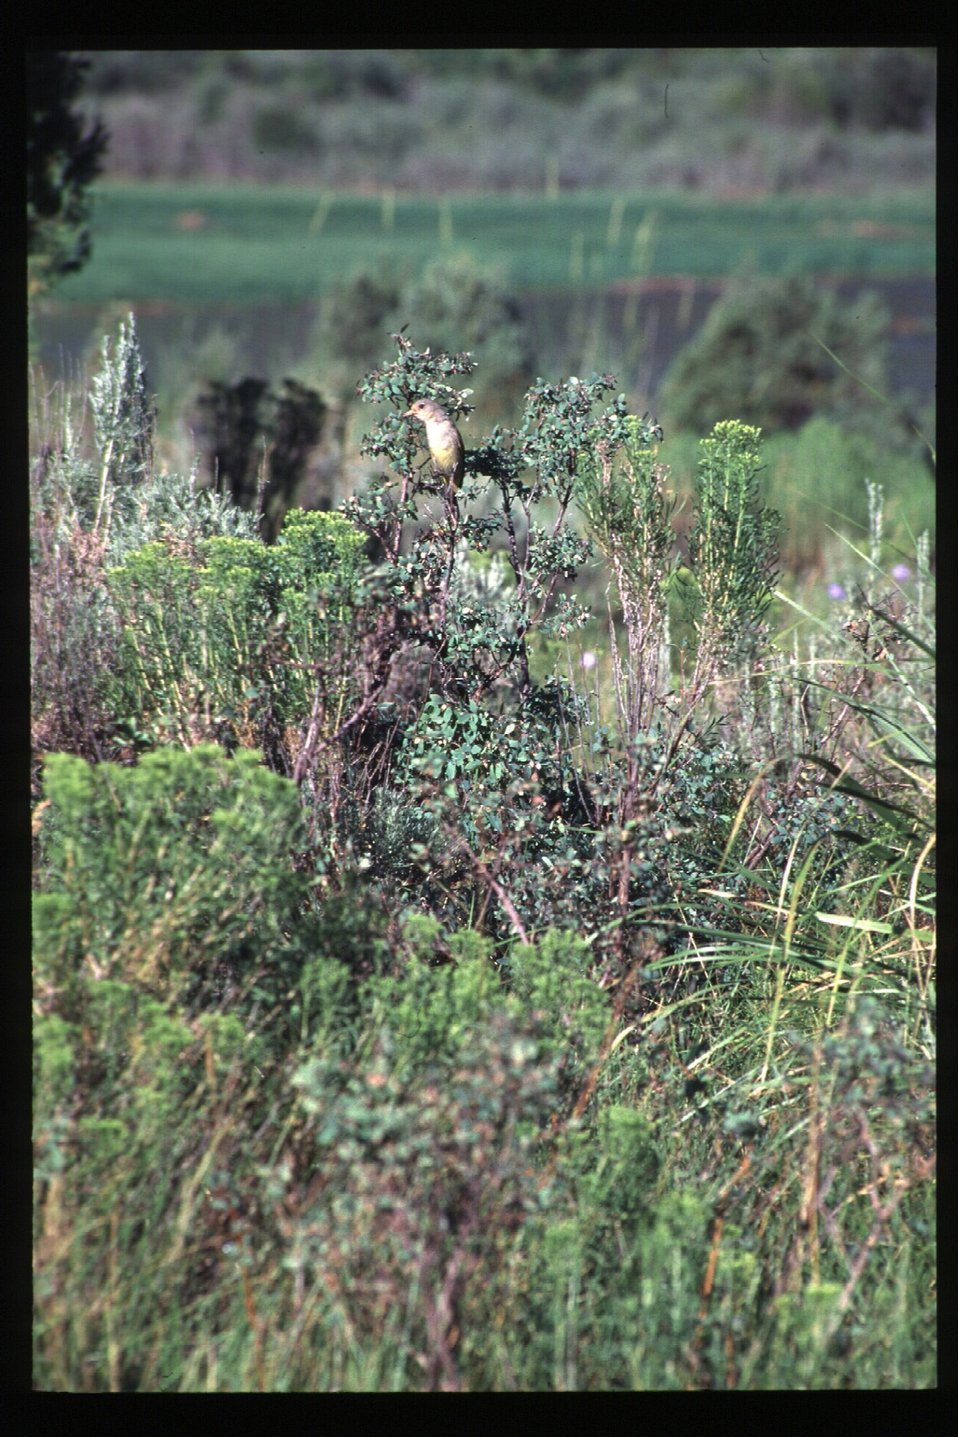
Scenics South Snake River Bird Snake River Canyon USRD Upper Snake River District